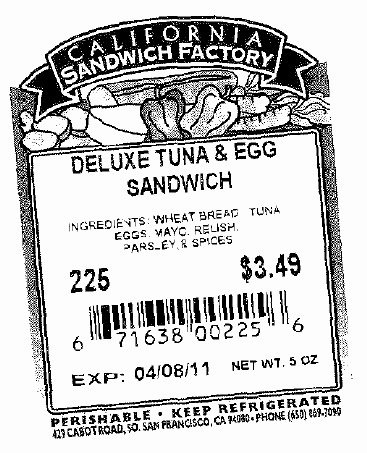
RECALLED - Sandwiches

April 12, 2011 - Product Recall - A-1 Sandwich Company Voluntarily Recalls Sandwiches with Undeclared Allergens.